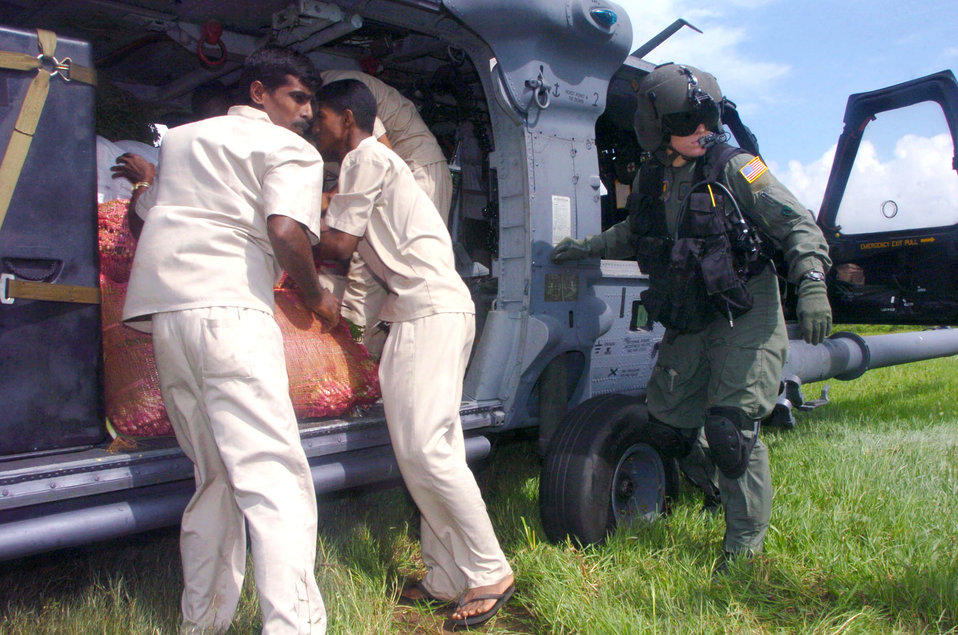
Kadena Airmen help Sri Lanka tsunami victims

DAMBULA, Sri Lanka -- Airman 1st Class Emily Starcher helps Sri Lankan relief workers unload vegetables from an HH-60G Pave Hawk helicopter during an Operation Unified Assistance mission here. She is a flight engineer assigned to the 33rd Rescue Squadron at Kadena Air Base, Japan. The Kadena Airmen are helping bring food, medicines and supplies to people affected by the Dec. 26 tsunamis.